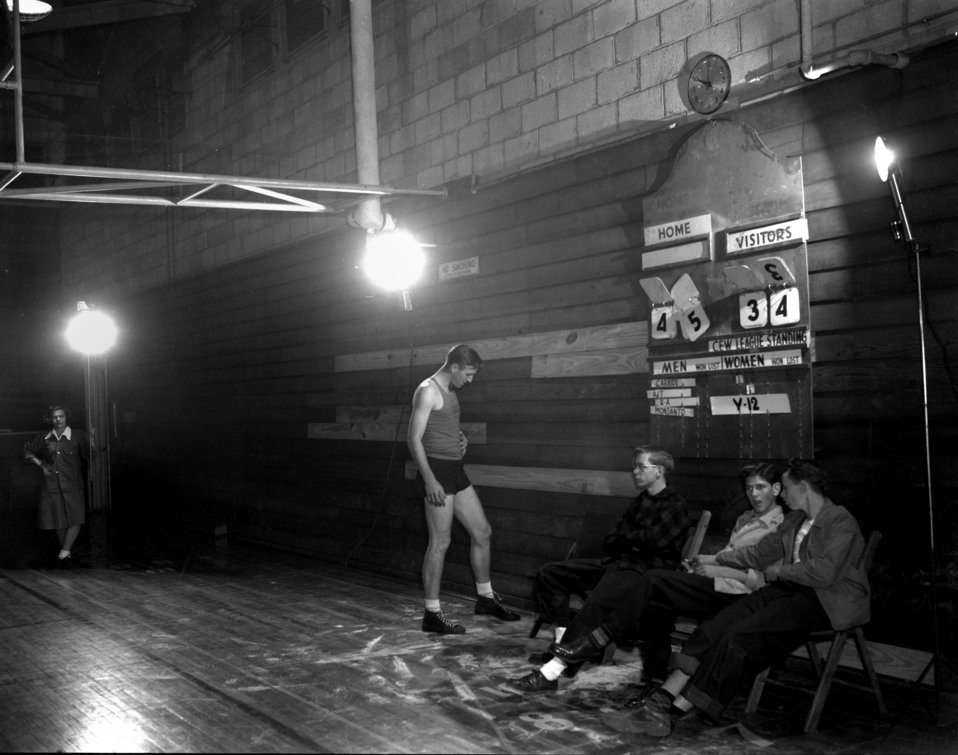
Basketball Elks Club

4167-10 DOE photo by Ed Westcott

Maryville Tennessee 12-28-1947